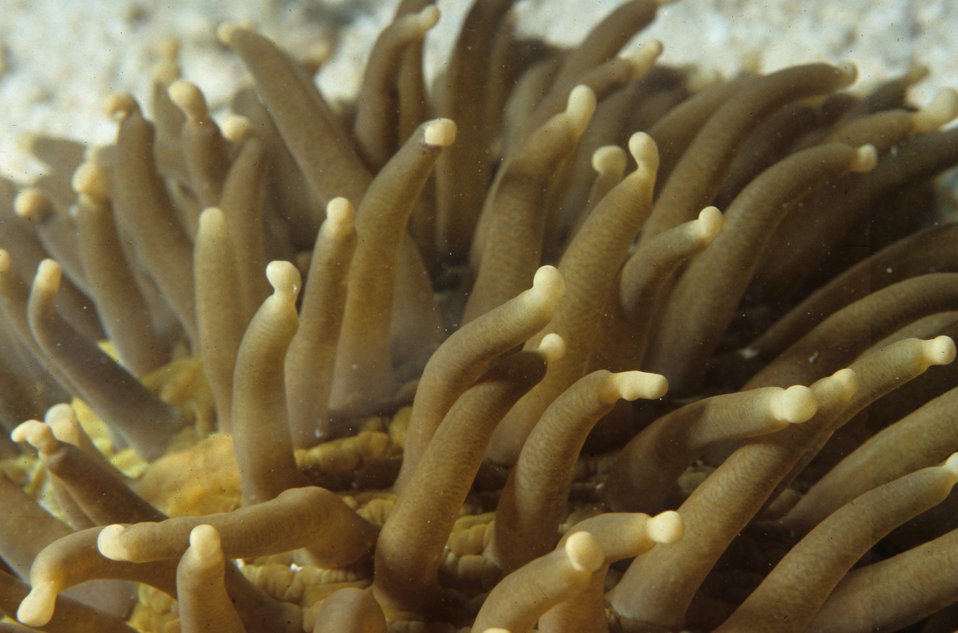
One Tree Reef. Sea anemone.